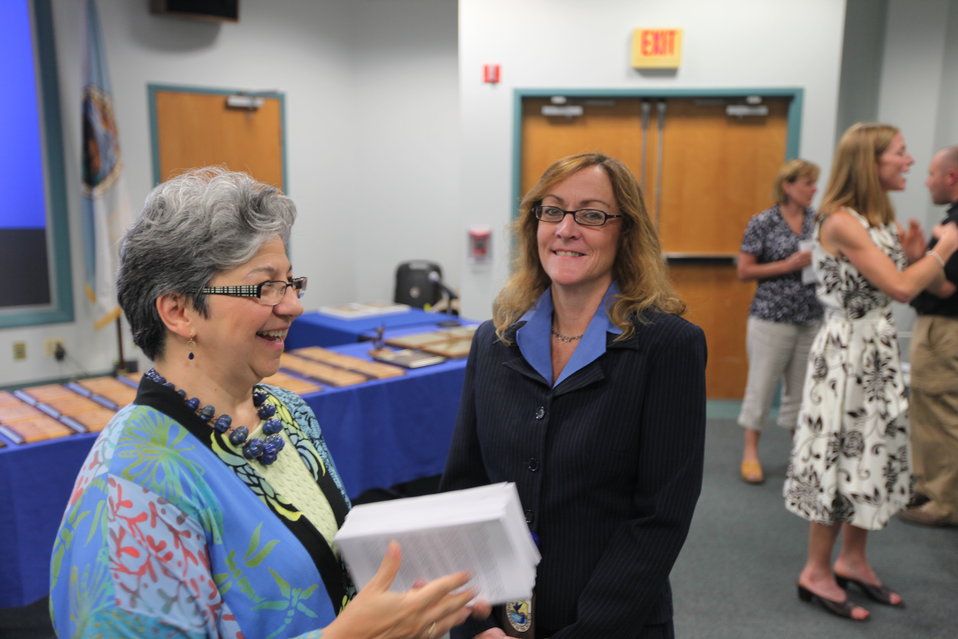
Northeast Region Employee Appreciation Awards

Event Coordinator Marci Caplis and Kathy Whittemore